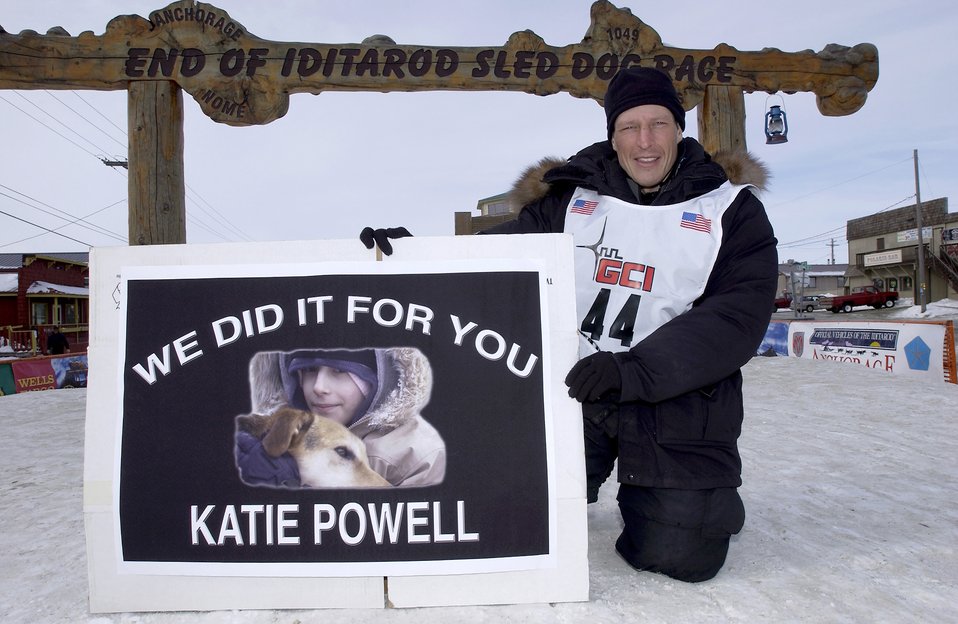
Air Force doctor finishes Iditarod with flourish

Maj. (Dr.) Thomas Knolmayer poses after finishing the 2006 Iditarod Sled Dog Race Friday, March 17, 2006, in Nome, Alaska. Doctor Knolmayer finished the 1,150-mile race across Alaska in 11 days, 22 hours and 13 minutes, bettering his time from last year by 47 hours. Katie Powell, the girl in the message, is the 10-year-old daughter of Senior Master Sgt. Chris Powell of Travis Air Force Base, Calif. She has Ewing's Sarcoma, a bone cancer. Her wish to be a part of the Iditarod was made possible by several units at Travis.